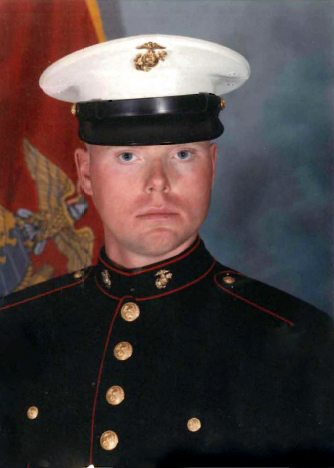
Greg Westfall, an Information Technology Specialist in Region 3, was serving as a field wireman with 3rd Battalion 1st Marines on a western Pacific tour in 1989. During a military exercise, a helicopter with about 22 marines onboard crashed, and several of his fellow Marines died. This, Westfall says, “made me grow up very fast. I was 19 and really this was my first time away from home. It really changed my perspective on life, and I believe it made me a better man.”